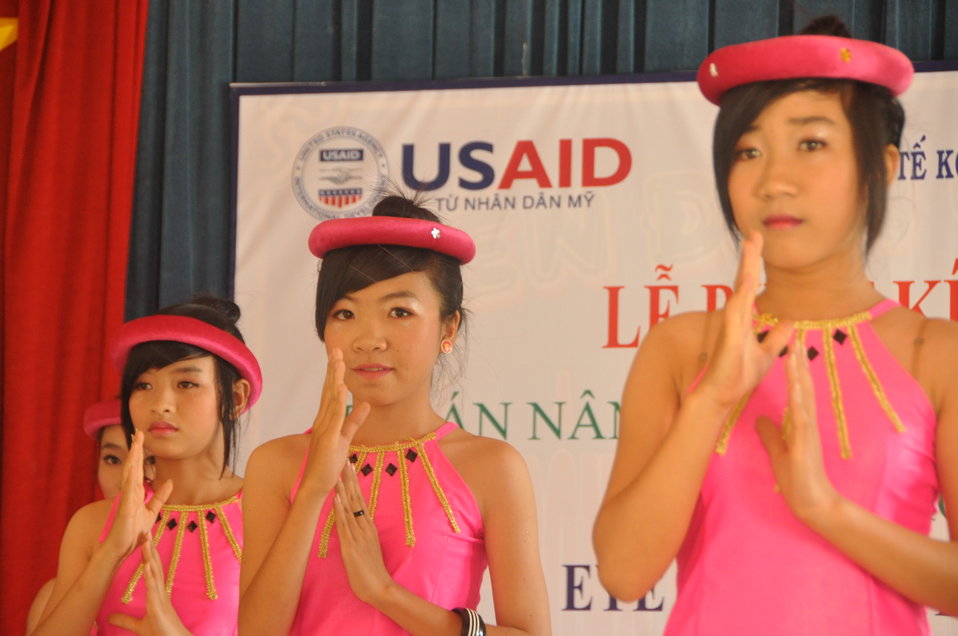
School children in Dak To, Kon Tum Province, receive eyeglasses under a program supported by USAID and partners HKI and World Learning